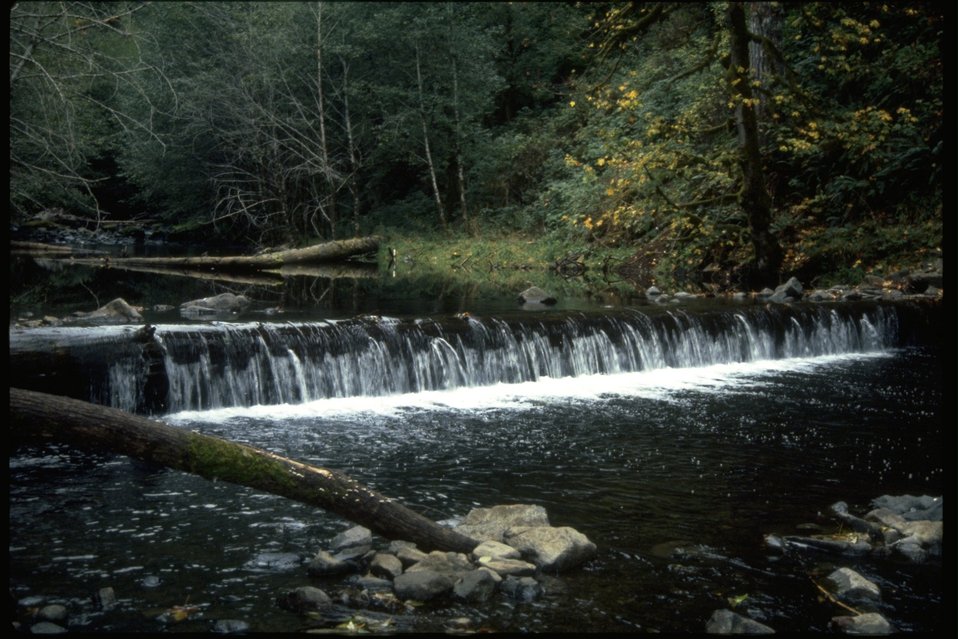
A fishing weir in the Nestucca River.